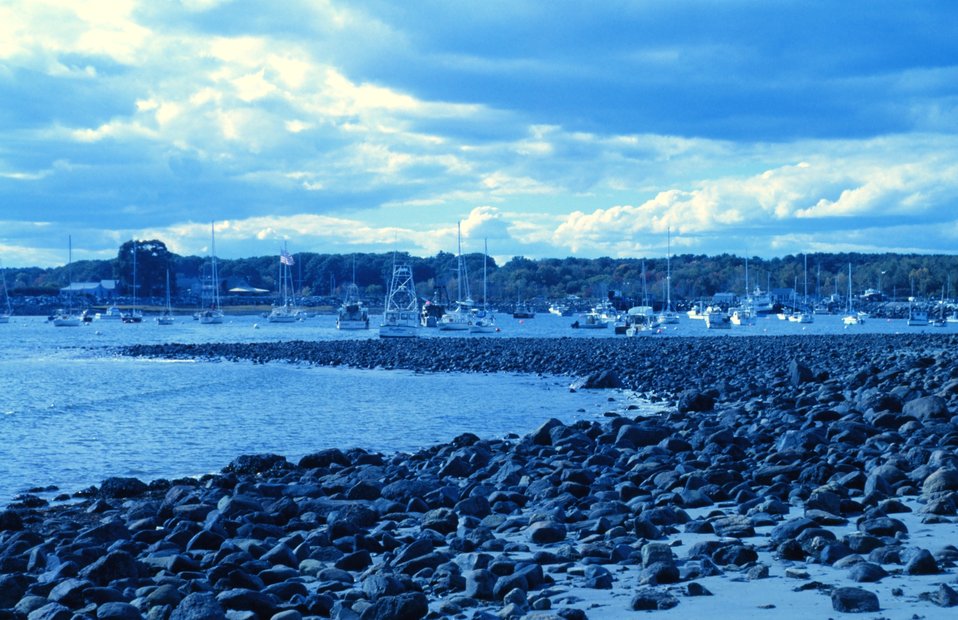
Cobble beach at Odiorne Point State Park.